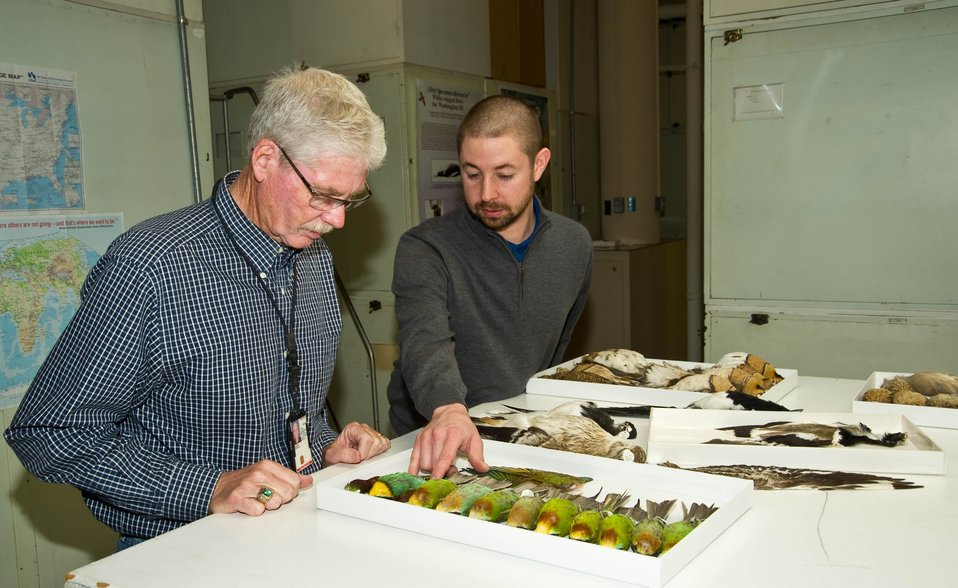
U.S. Department of Agriculture (USDA) Animal Plant Health Inspection Service (APHIS) Wildlife Biologist George Graves and Smithsonian Institution National Museum of Natural History Feather Identification Lab Research Scientist Jim Whatton look over a sample of the birds in the Smithsonian collection on Tuesday, Mar. 19, 2013.